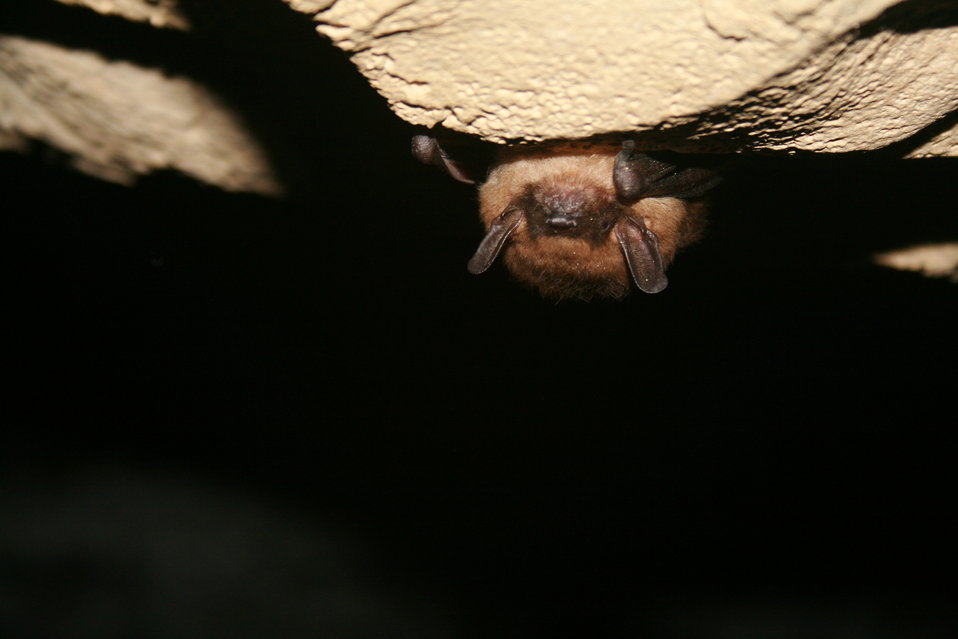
healthy hibernating big brown bat

Eptesicus fuscus